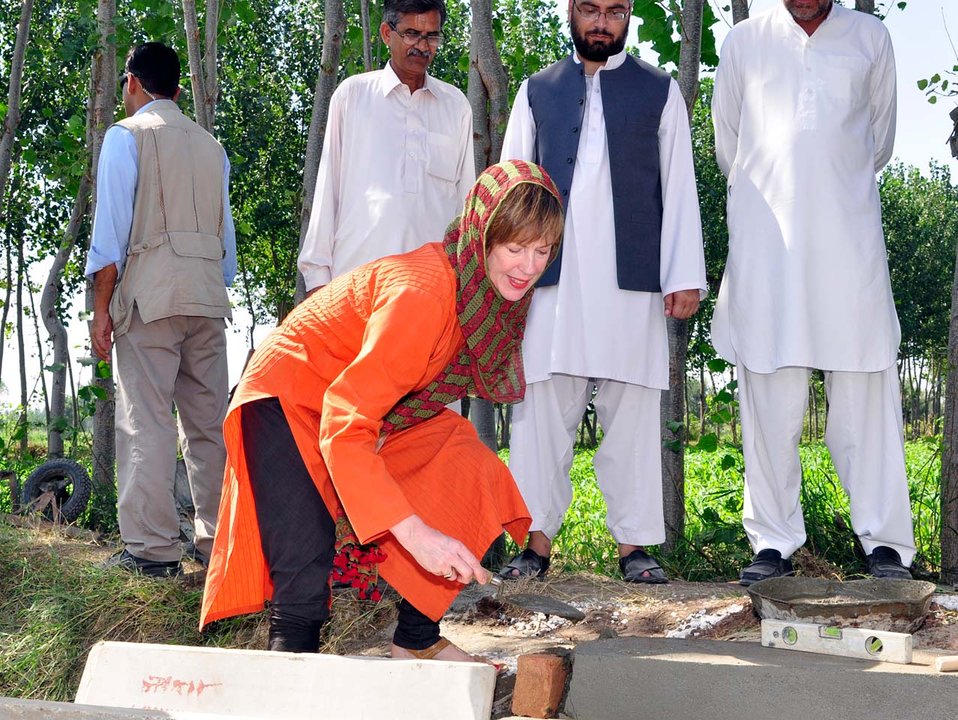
Dr. Marilyn Wyatt's Visit to the Flood-affected Farming Communities in Khyber Pakhtunkhwa